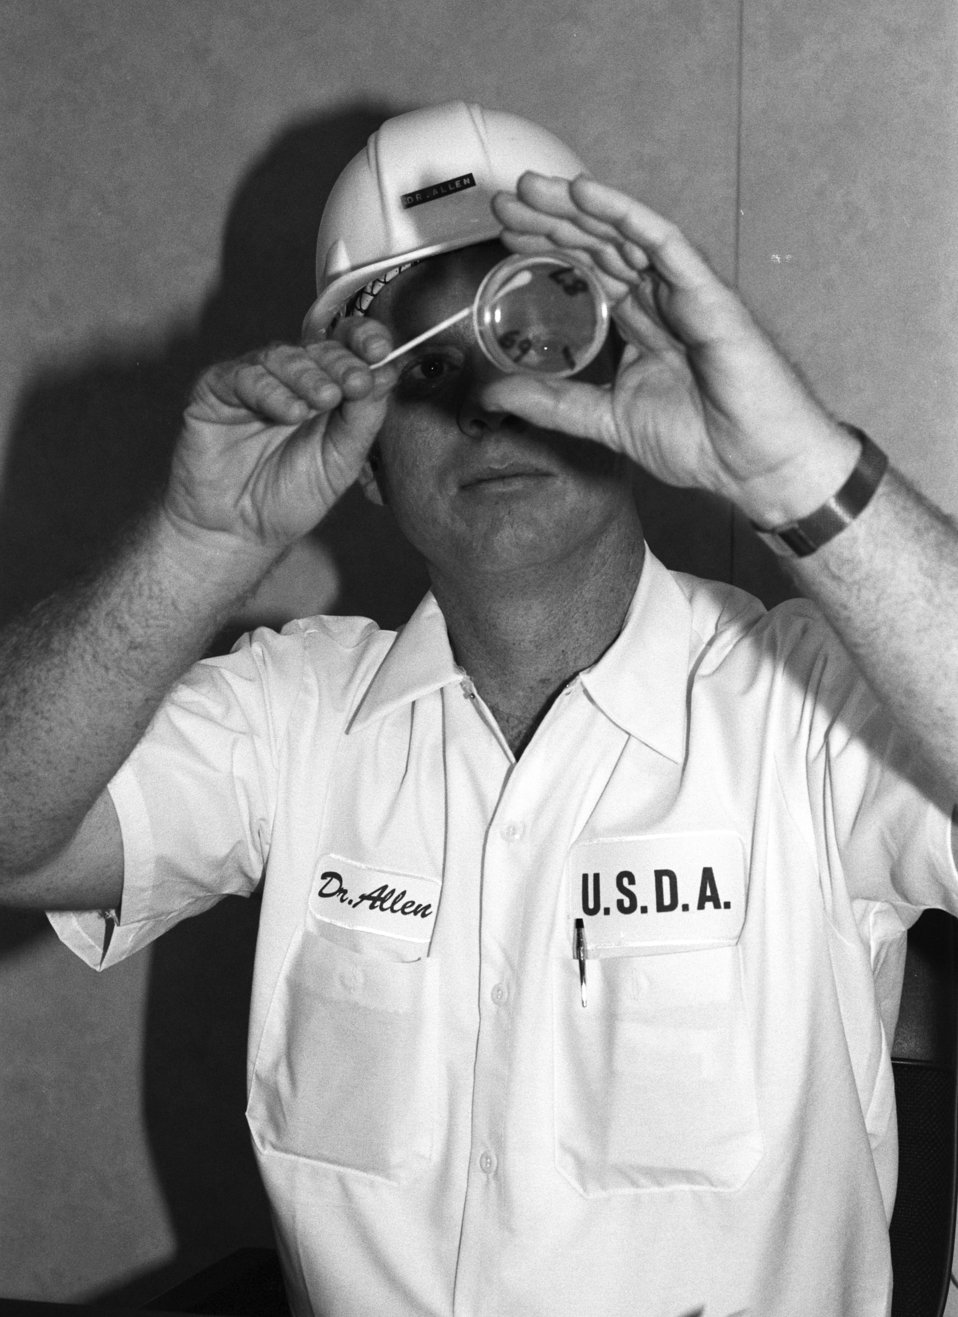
U.S. Department of Agriculture (USDA) Food Safety Inspection Service (FSIS) inspectors inspect beef using a Streamline Inspection System (SIS) at a processing plant in Plainview, TX on January 22, 1991.